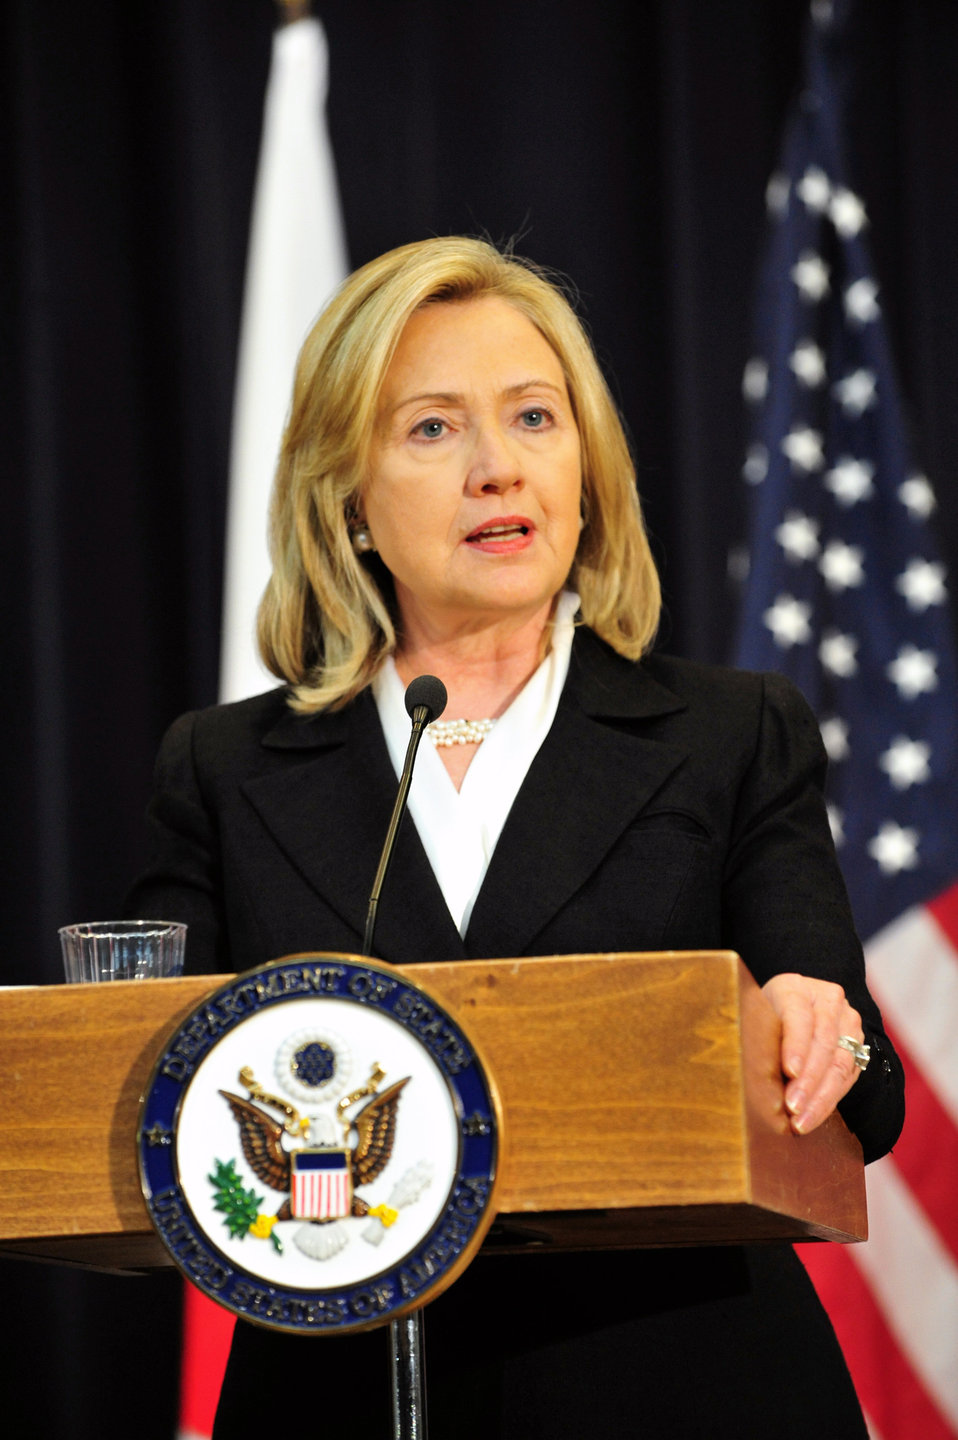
Secretary Clinton Delivers Remarks

U.S. Secretary of State Hillary Rodham Clinton delivers remarks at the joint press conference after the U.S.-Japan Security Consultative Committee meeting, known as the 2 2, at the U.S. Department of State in Washington, D.C., on June 21, 2011.